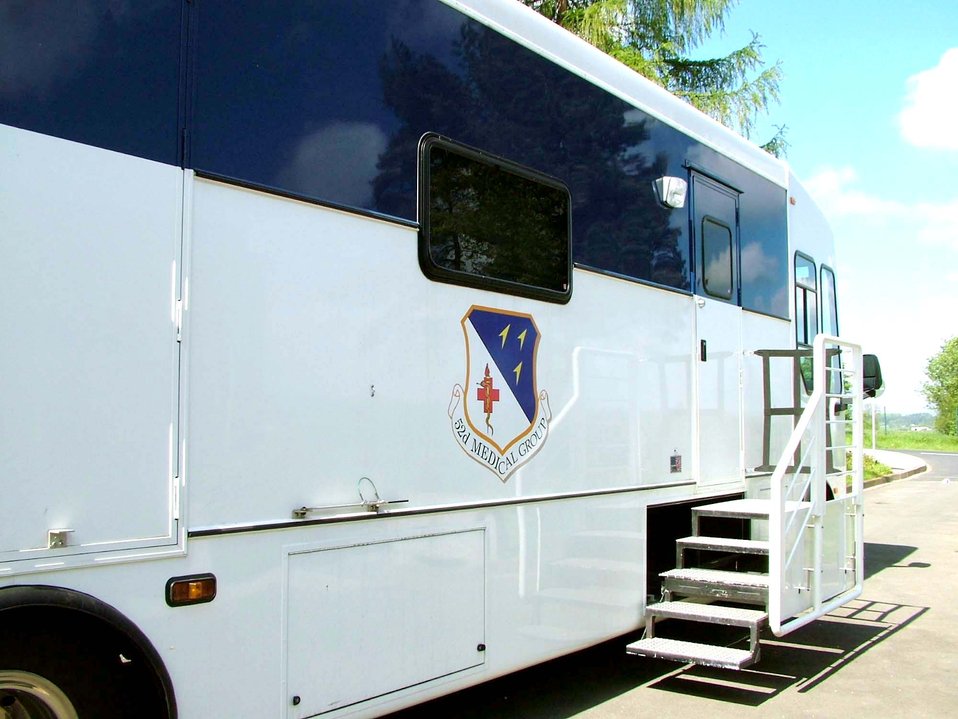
Mobile dental bus helps drive away plaque

SPANGDAHLEM AIR BASE, Germany -- The 52nd Dental Squadron's dental bus is a fully functioning dental clinic on wheels and is the only one of its kind in the Air Force. The 40-foot long, air-conditioned bus is handicap accessible and features two dental treatment units, an X-ray machine and processor, a sterilization area and a waiting room. The bus visits four geographically separated unit sites in three countries twice a year.